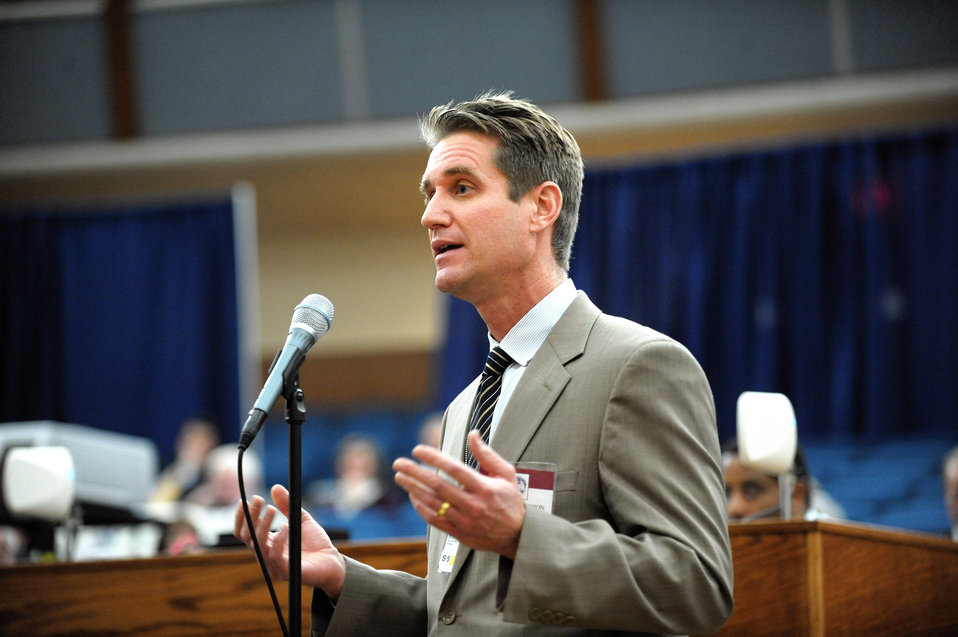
An Ambassador poses a question at the Town Hall during the 2011 Global Chiefs of Mission Conference at the U.S. Department of State in Washington, D.C., on February 3, 2011.